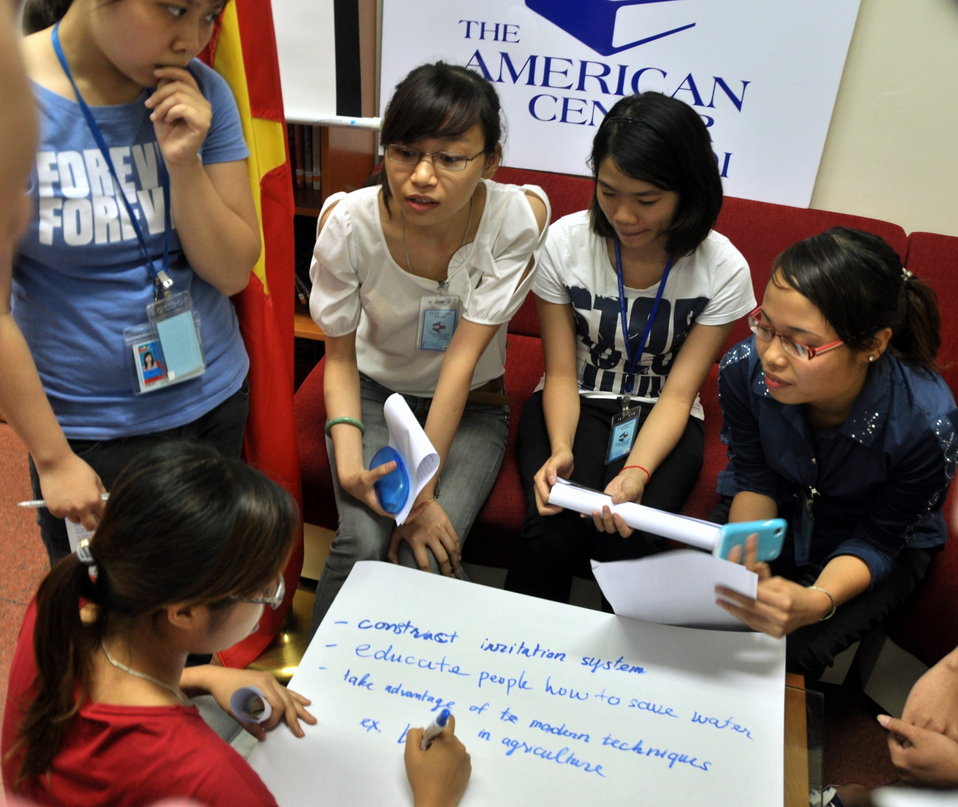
Climate Change Talk at the American Center

Hanoi, May 28, 2013.